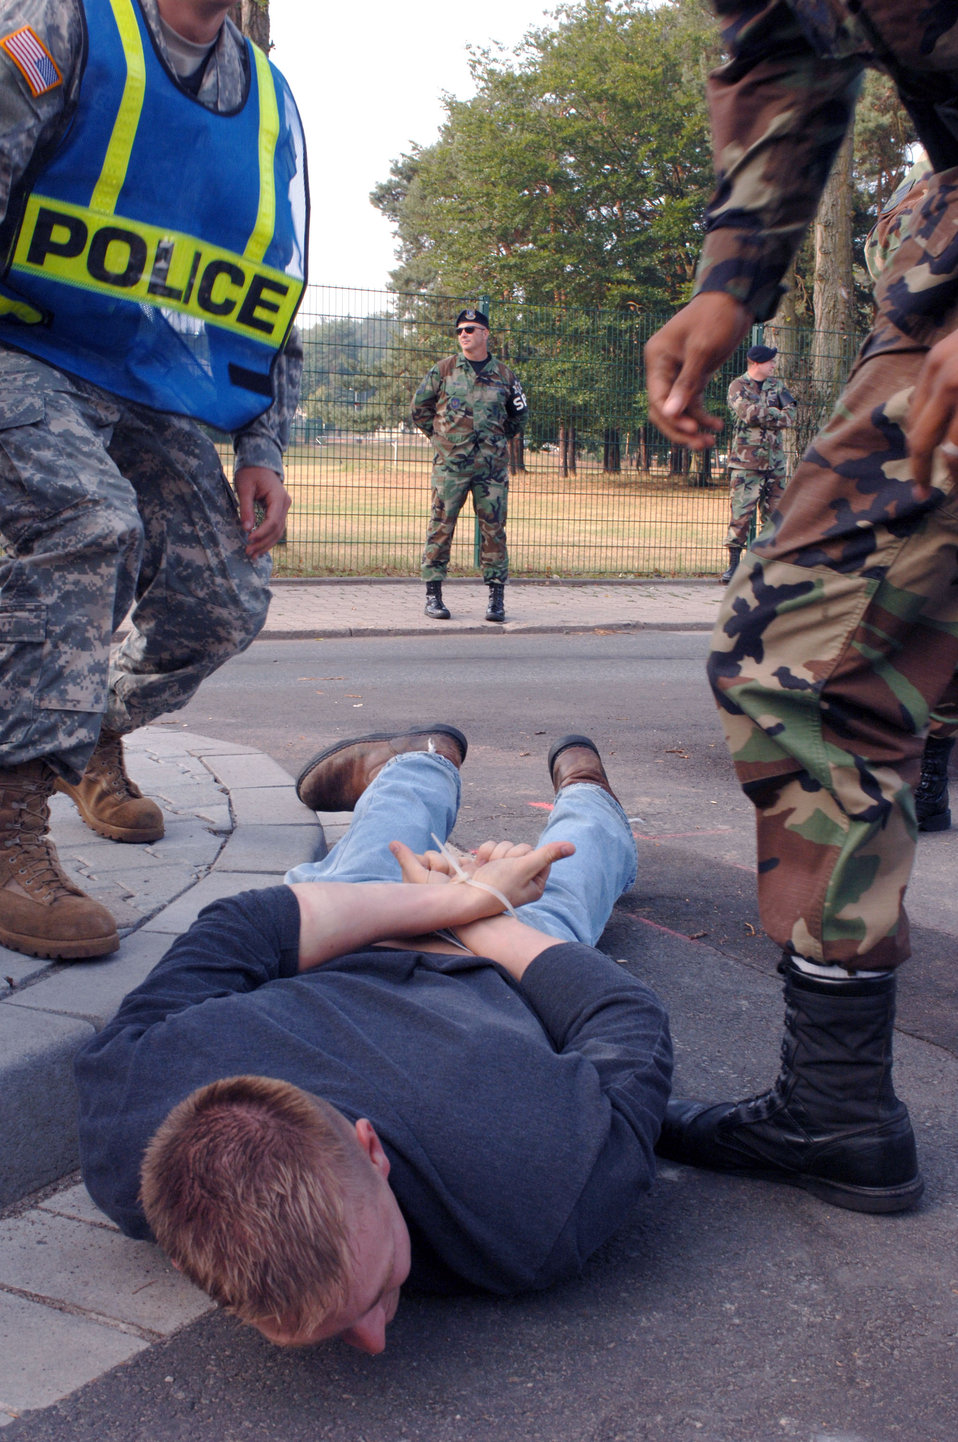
Confrontation management exercise

Airman 1st Class Jeffrey Alvis is cuffed on the ground with zip-ties by Senior Airman Xavier Drake during a confrontation managment exercise at Vogelweh Air Station, Germany, on Aug. 4. The Airmen are with the 569th U.S. Forces Police Squadron.